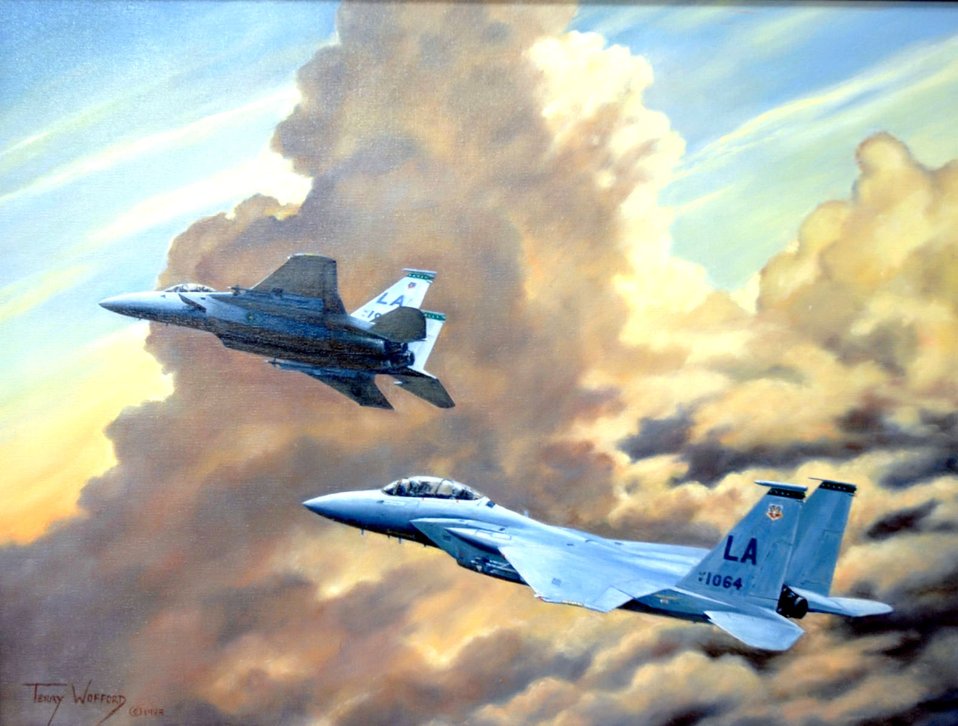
Museum commemorates 60th anniversary with art exhibit